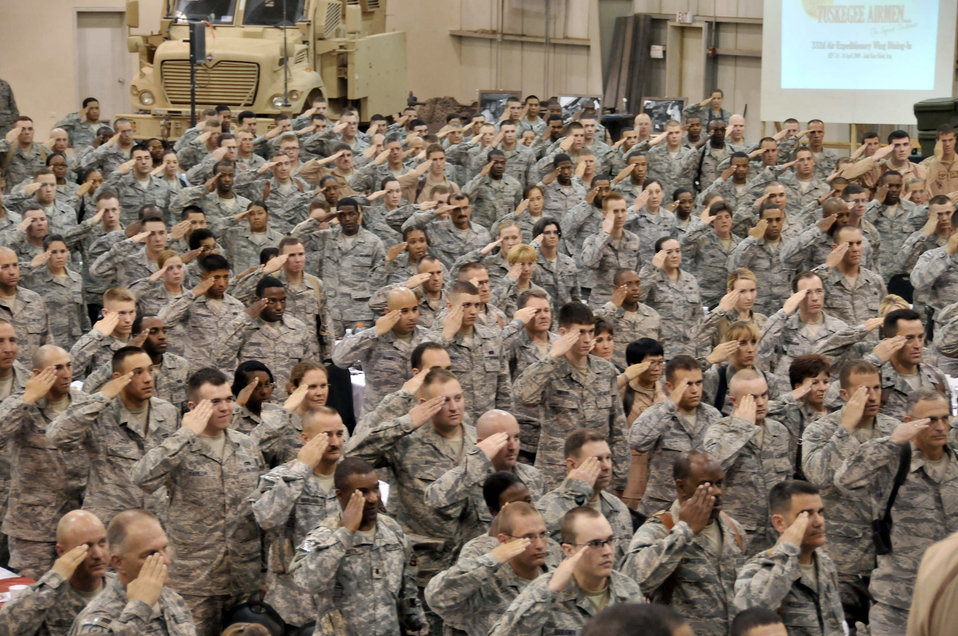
Tuskegee Airmen ... the legacy continues

Hundreds of Airmen from the 332nd Air Expeditionary Wing pay tribute to four Tuskegee Airmen during a combat dining-in April 24 at Joint Base Balad, Iraq. The 332nd AEW traces its military lineage back to the Tuskegee Airmen, who were part of the 332nd Fighter Group.